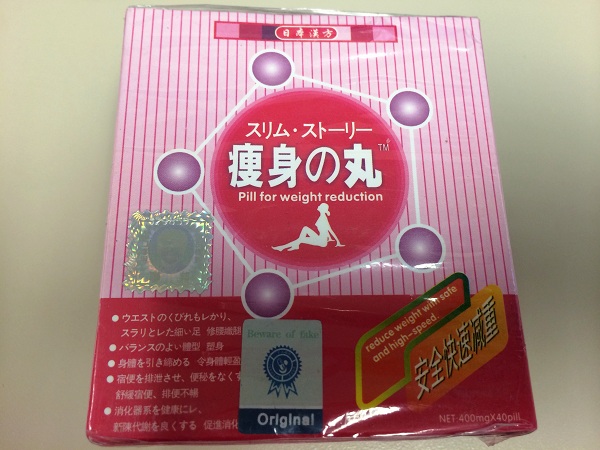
RECALLED - Reduce Weight Fruta Planta

February 4, 2014 – Product Recall – MyNicKnaxs, LLC. Issues a Voluntary Nationwide and International Recall of All Weight Loss Formulas of Reduce Weight Fruta Planta.